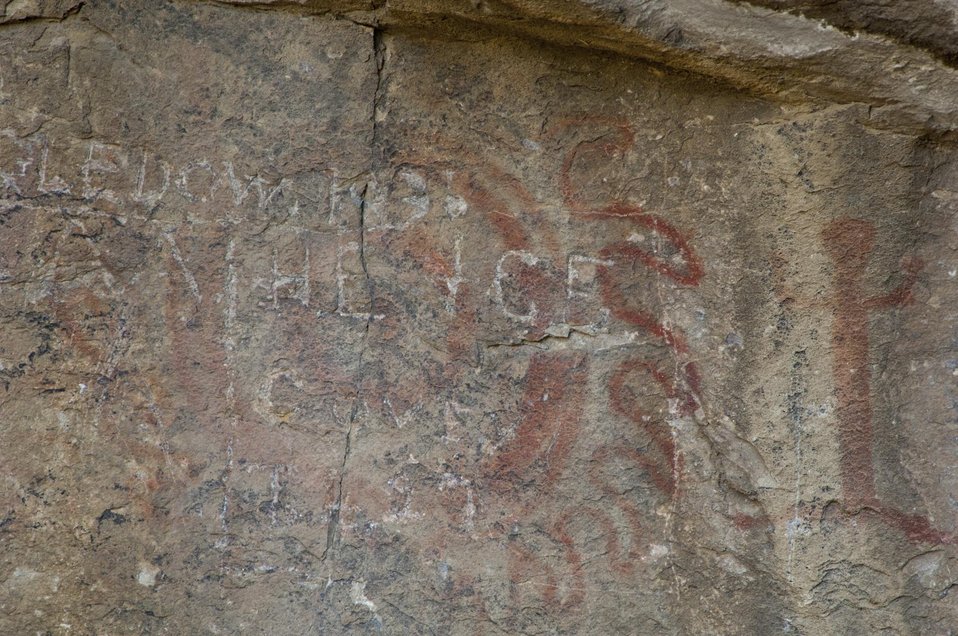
Pictograph at Painted Rock, Carrizo Plain 7